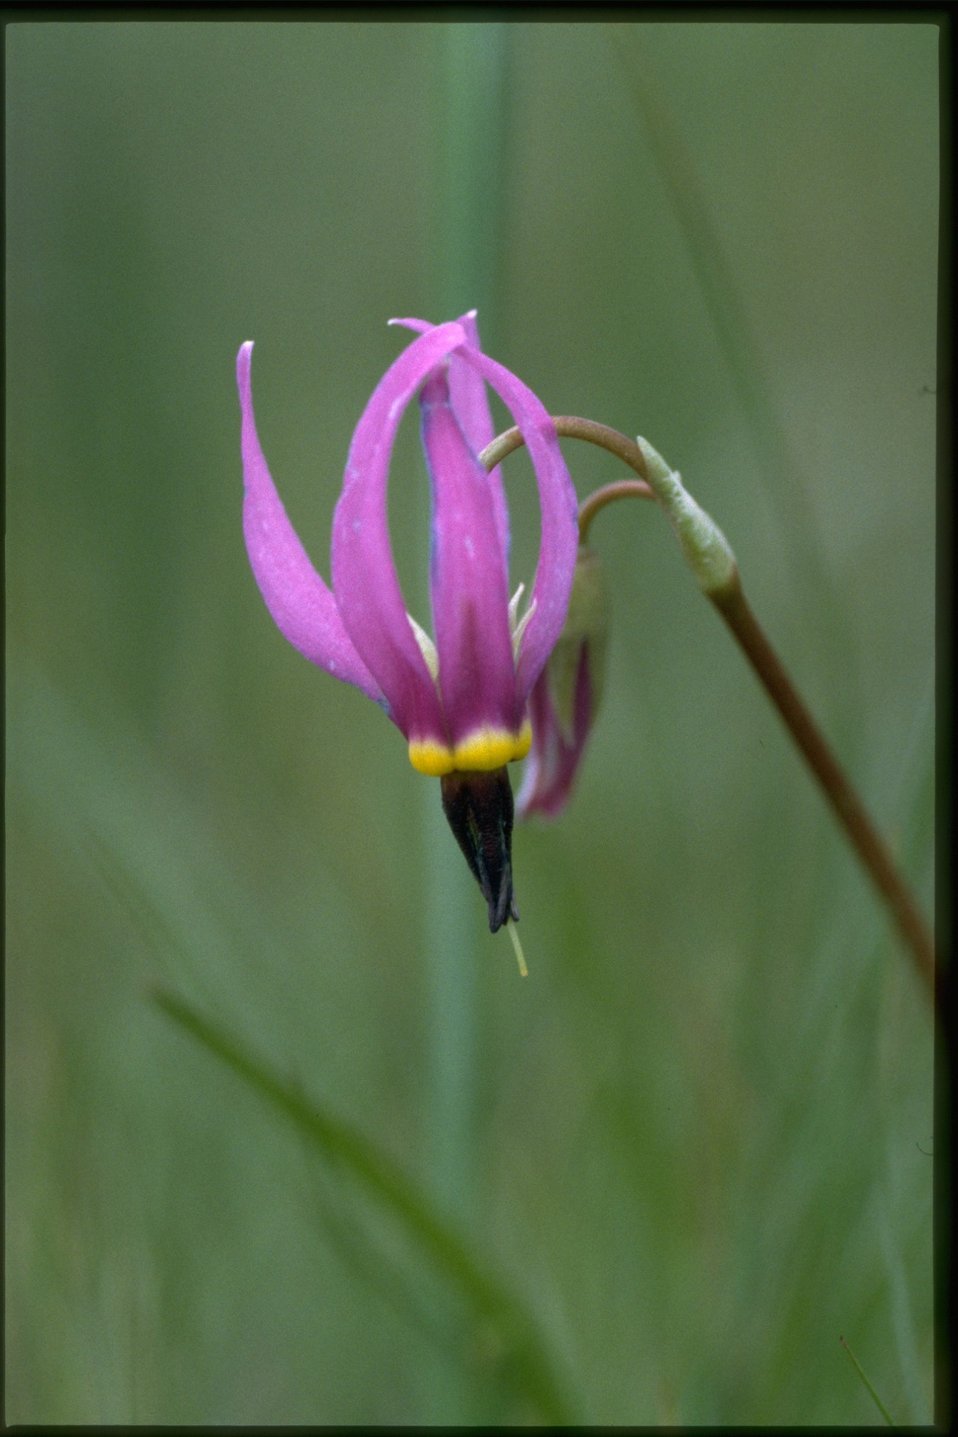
Closeup shot of Dark-Throat Shooting Star, Dodecatheon Pulchellum wildflower.